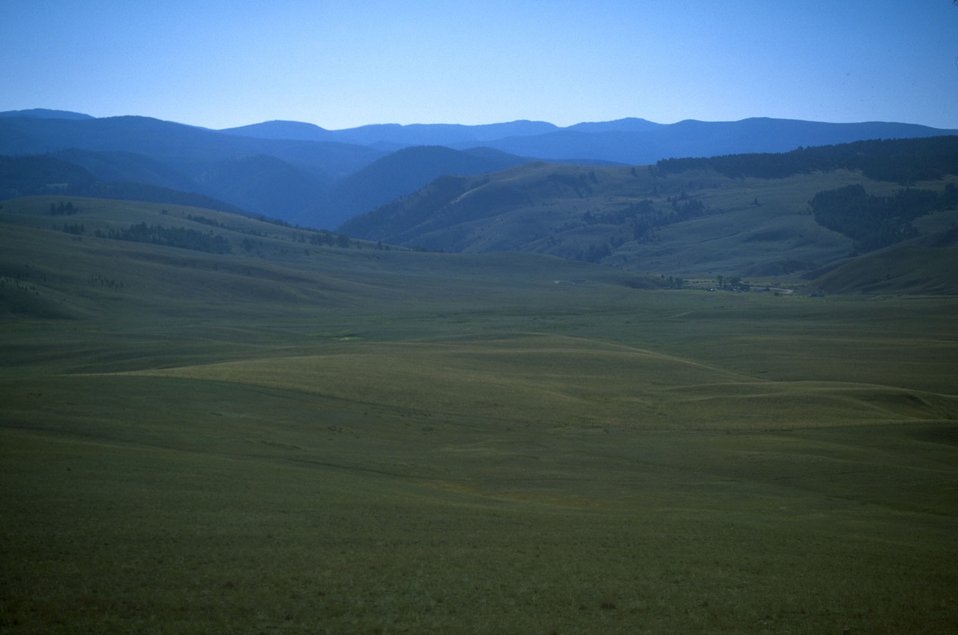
Rock Creek Valley